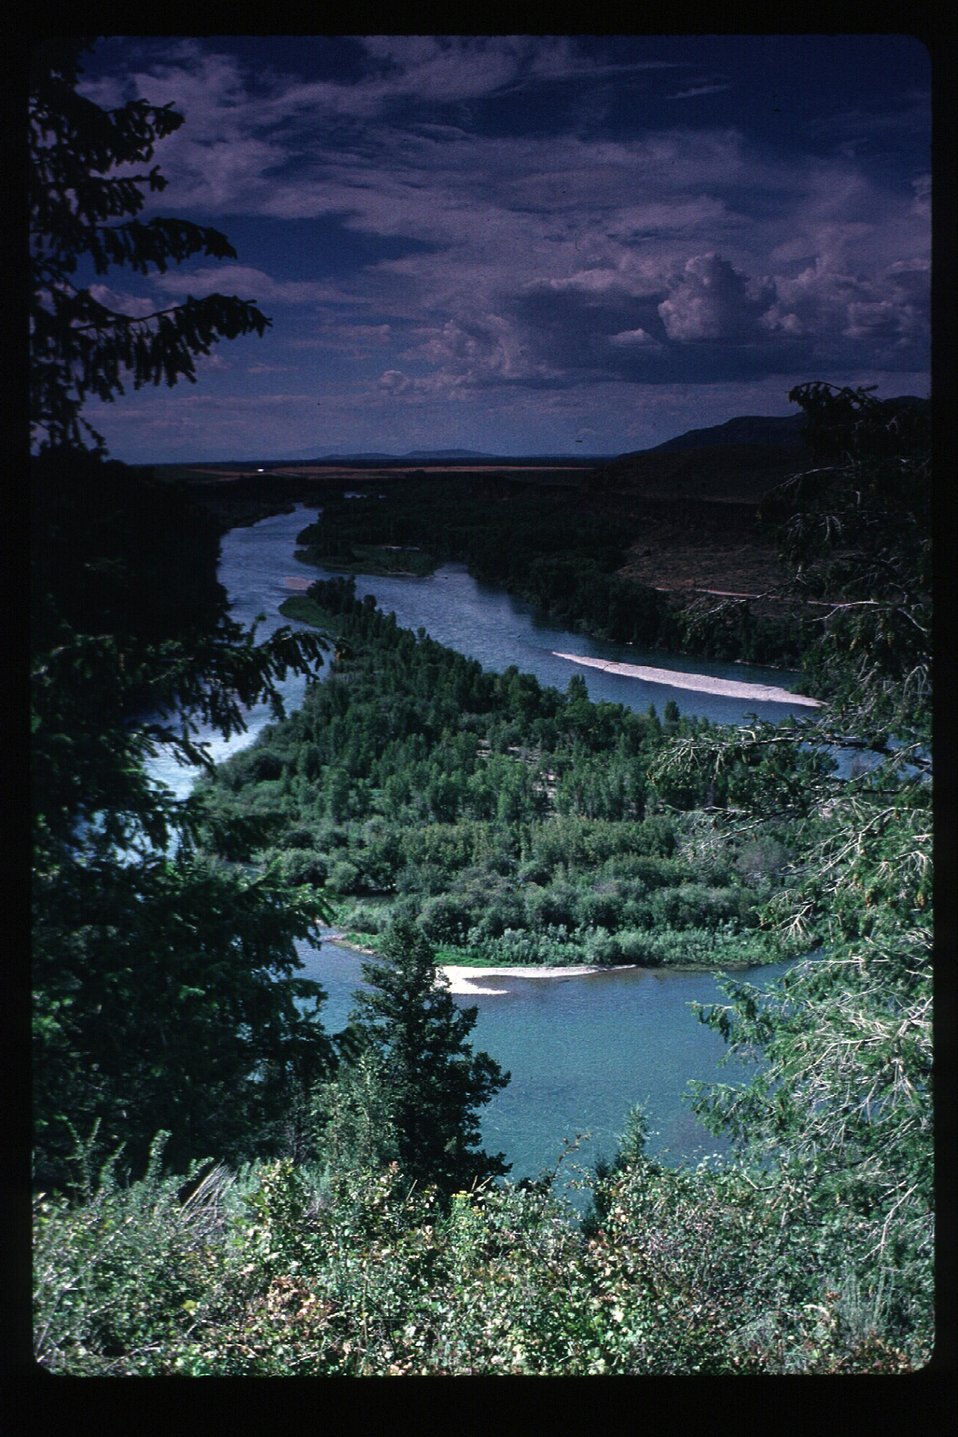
South Fork of Snake River Scenic Idaho Falls Field Office USRD Upper Snake River District